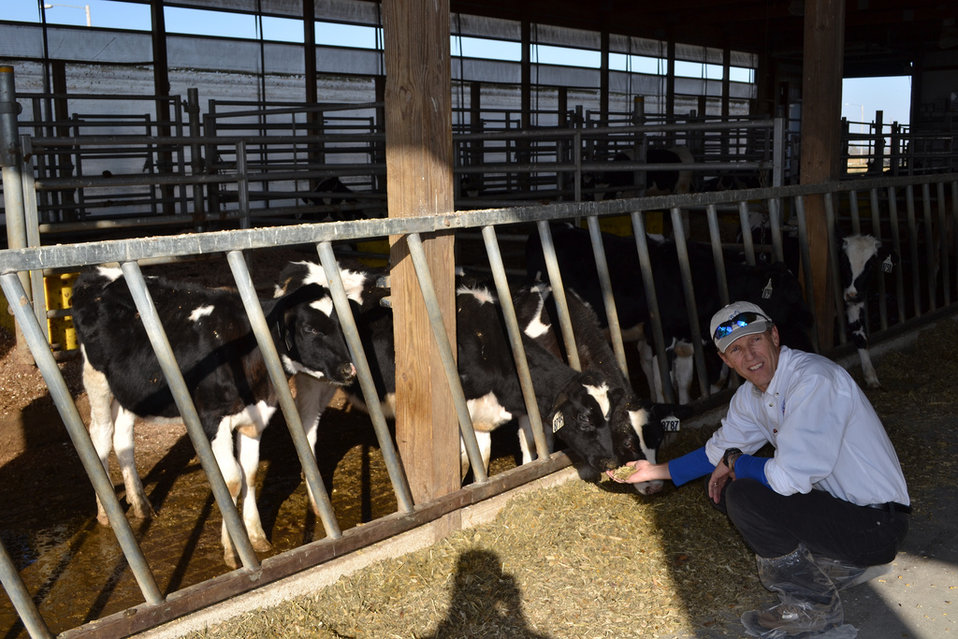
October 21, 2011 EPA Regional Administrator Tours Iowa State Dairy Farm

EPA Region 7 Administrator Karl Brooks visited with Iowa State University students, faculty and staff on Oct. 21 as part of his outreach to land-grant institutions in Iowa, Kansas, Missouri, and Nebraska.

He toured Iowa State University's dairy farm and met with students in a soils and environmental quality class.